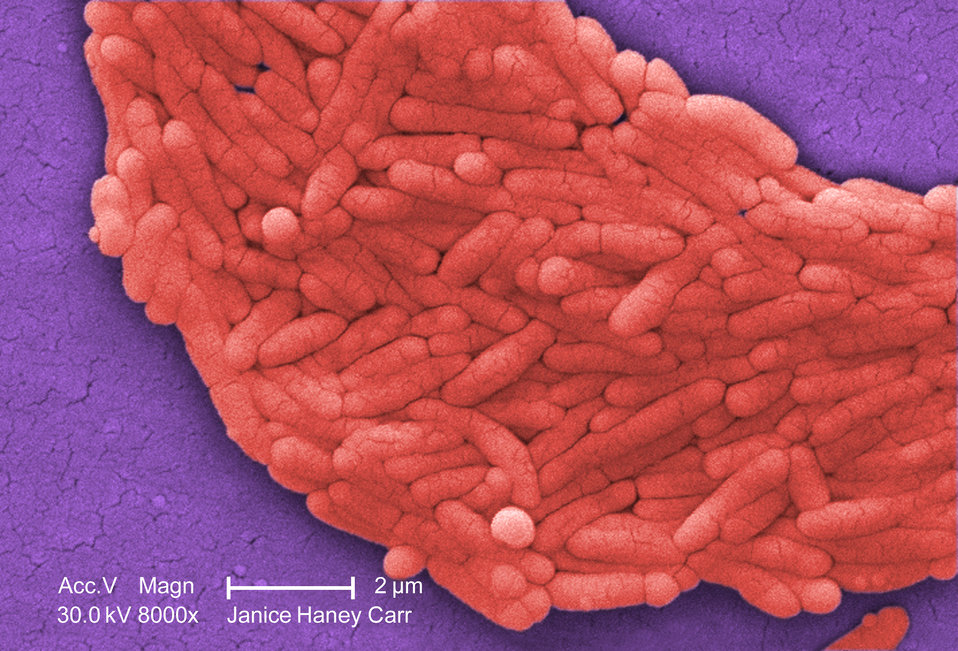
Under a moderately-high magnification of 8000X, this colorized scanning electron micrograph (SEM) revealed the presence of a large grouping of Gram-negative Salmonella typhimurium bacteria that had been isolated from a pure culture.